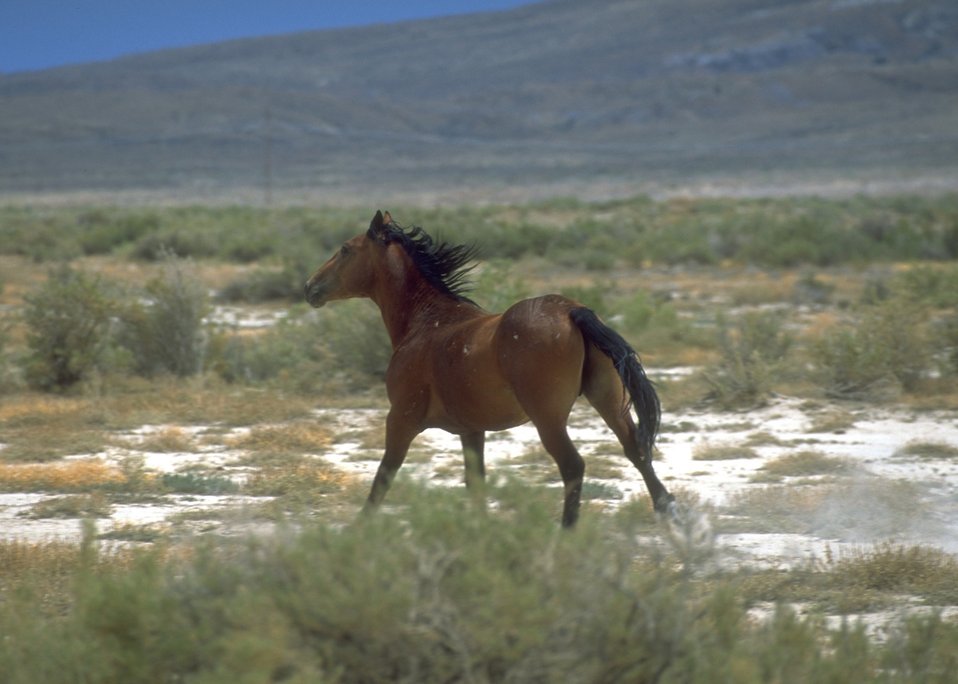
Wild horses, Rock Springs Field Office.